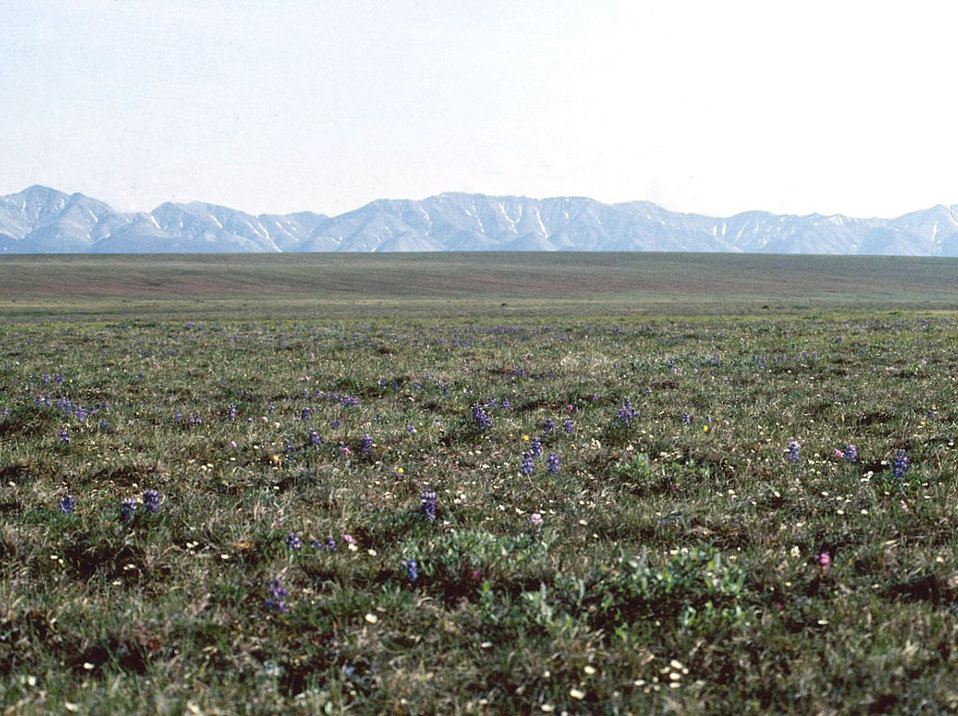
1002 Area: tundra in bloom

Arctic National Wildlife Refuge; Brooks Range;